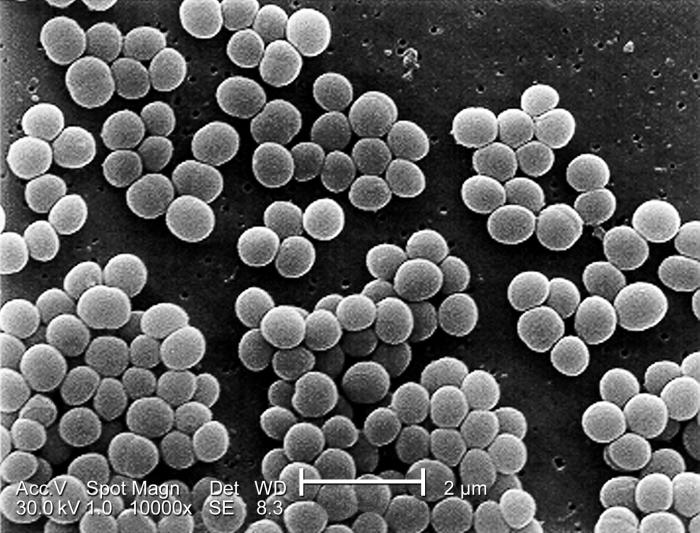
Under a high magnification of 10,000x, this scanning electron micrograph (SEM) shows a strain of Staphylococcus aureus bacteria taken from a vancomycin intermediate resistant culture (VISA).